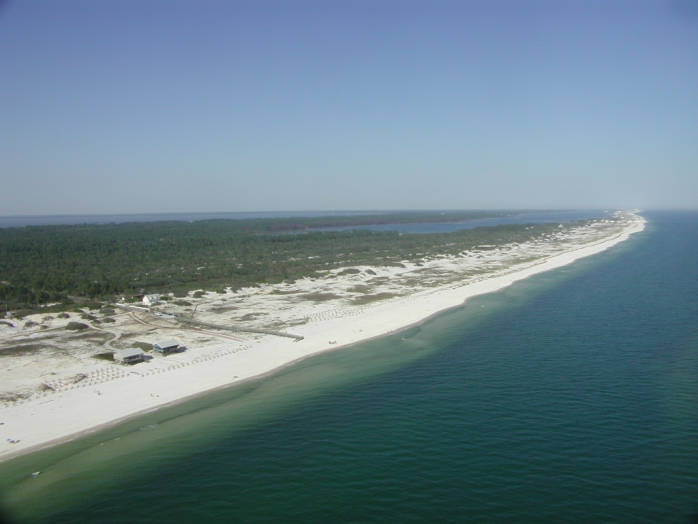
Coastline of the Bon Secour National Wildlife Refuge, Alabama Credit: Mike Reynolds